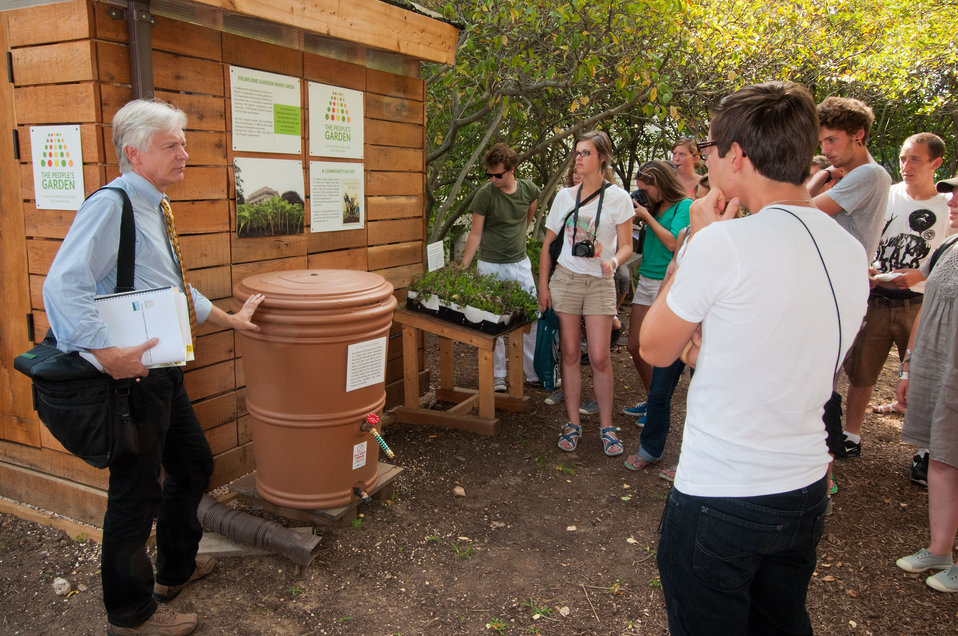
U.S. Department of Agriculture (USDA) Natural Resources Conservation Service (NRCS) National Landscape Architect Bob Snieckus (left) demonstrates the construction and operation of a rain barrel attached to a sustainably built shed that has a green roof to French students from Ecole Du Breuil, School of Horticulture and Landscaping in Paris, France at USDA’s People’s Garden in Washington, D.C., on Tuesday, Sept. 4, 2012. The class was lead by Landscape Architect Professor Hervé Dardillat. The students are on a two-week U.S. tour, which includes a visit to the White House Kitchen garden, as well as gardens and parks in Washington, D.C. The students will also visit Temple University in Philadelphia, PA in addition to parks and gardens in New York City, NY where they will also stay with host families and work on community gardens.